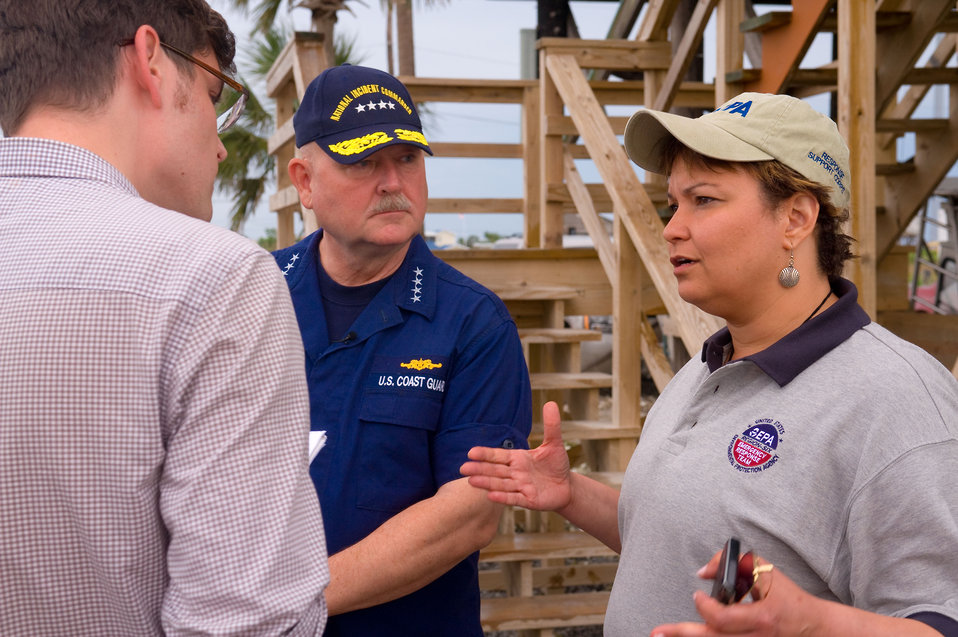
June 2, Lisa Jackson, Admiral Allen speak with Houma Herald Reporter

Lisa Jackson, Admiral Allen discuss BP Spill response with Houma Herald reporter.